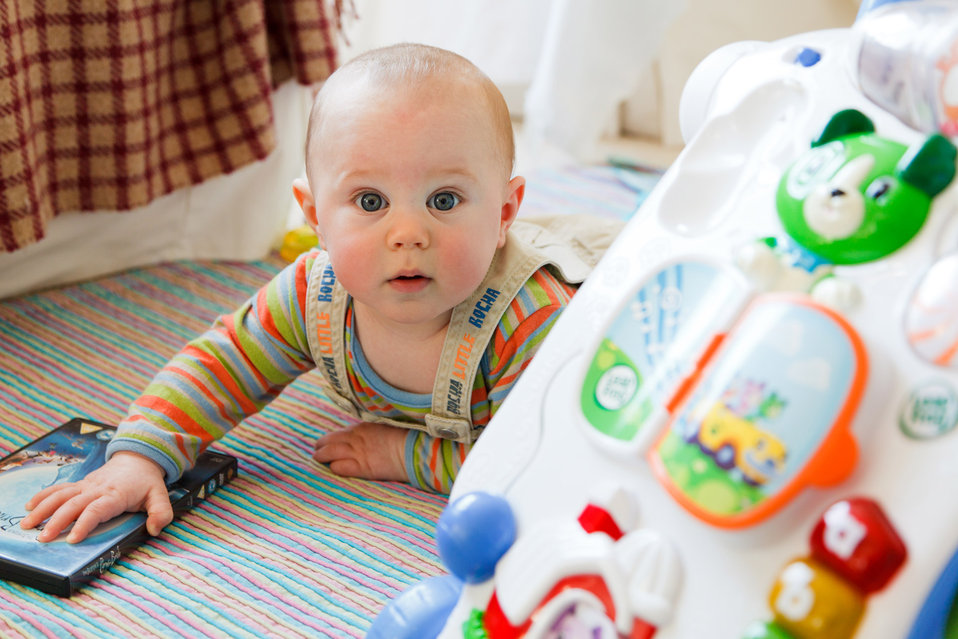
Toddler playing

I know that i have toys but i want to play with this dvd.